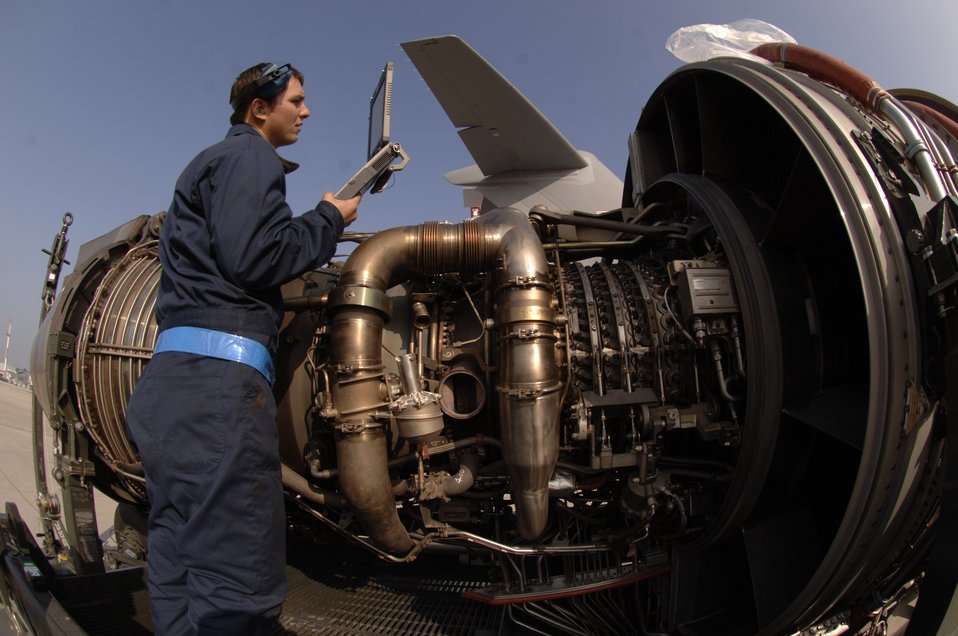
Ramstein flightline ops

Staff Sgt. Erik Marsaln reviews C-17 engine technical orders on his laptop to guide him through an engine change-out on a C-17 Globemaster III at Ramstein Air Base, Germany, Oct. 11. Sergeant Marsaln is assigned to the 723rd Air Mobility Squadron.